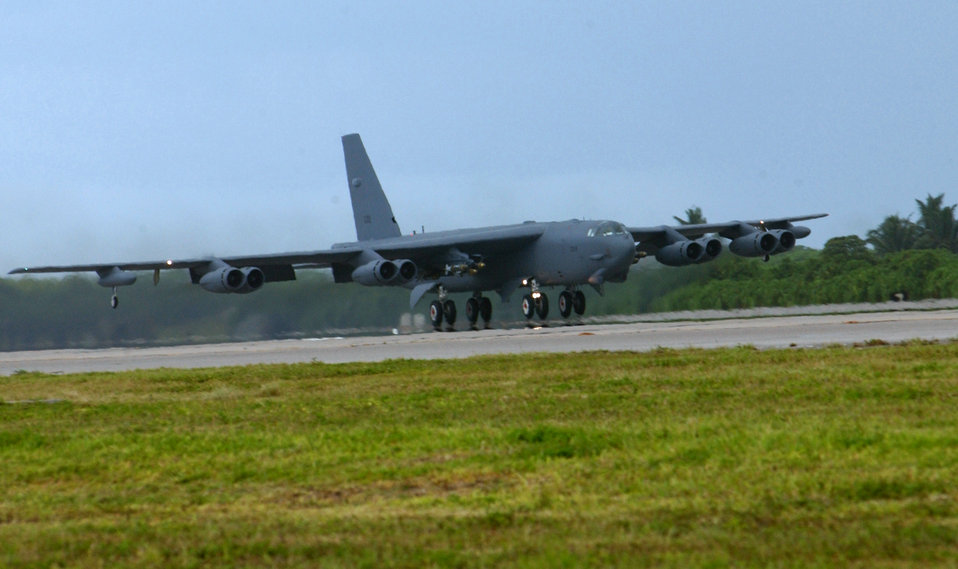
Bring in the heavies

OPERATION IRAQI FREEDOM -- A B-52 Stratofortress roars down the runway at a forward-deployed air base headed for a bombing mission in Iraq.